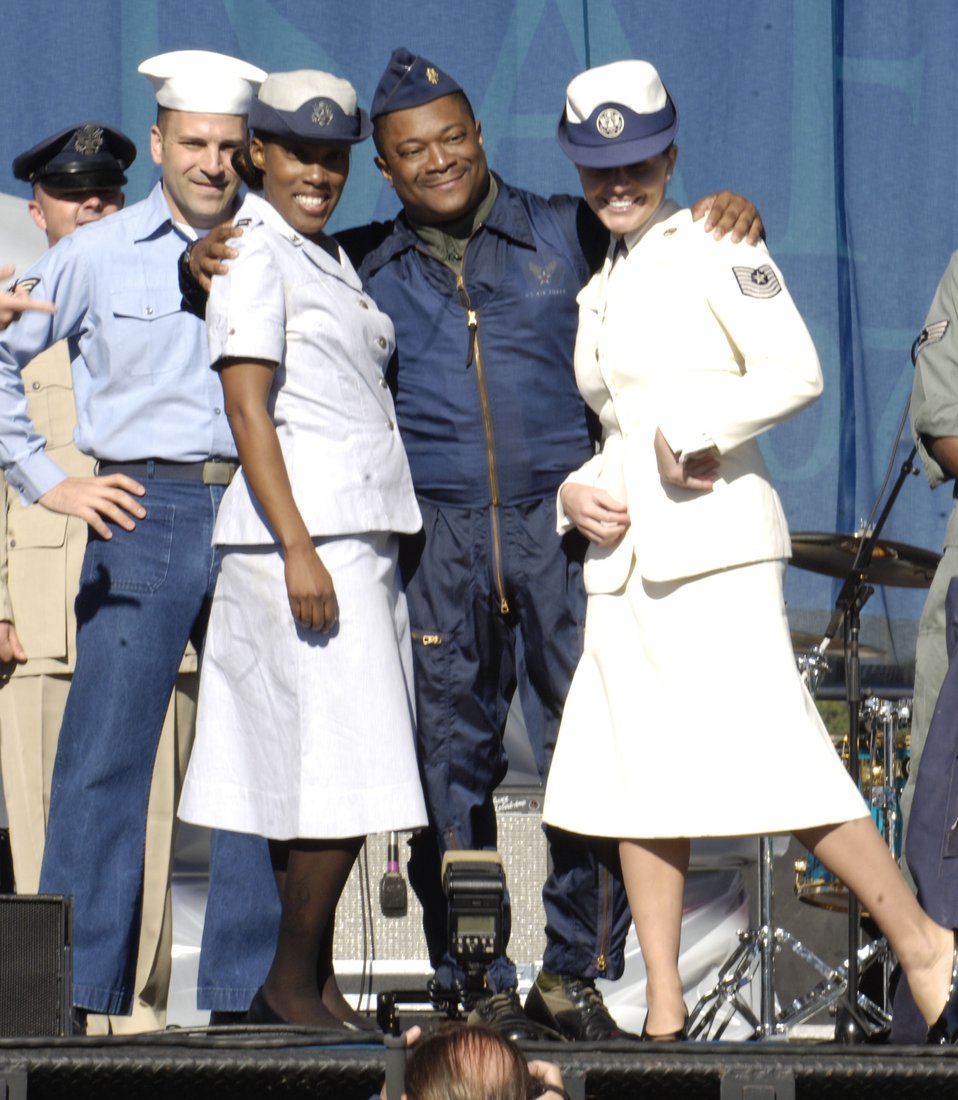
Air Force Memorial

Current and former members of the United States Air Force and its predecessor organizations present a parade of uniforms at an Air Force open house at the Pentagon on Saturday, Oct. 14, 2006. The open house is running in conjunction with the official ceremony to dedicate the Air Force Memorial. President George W. Bush will join Senior Defense Dept. and Air Force officials in a ceremony to present the memorial to the Nation. Designed by the late James Ingo Freed the memorial with its three soaring spires inspired by the U.S. Air Force Thunderbirds bomb burst manuever, pays tribute to and honors the patriotic men and women of the U.S. Air Force and its predeccessor organizations. An open house will run near the Pentagon in conjunction with the dedication ceremony which will feature performances by the U.S. Air Force Band, the U.S. Air Force Honor Guard drill team, and will culminate with a concert featuring country music performer LeeAnn Womack.